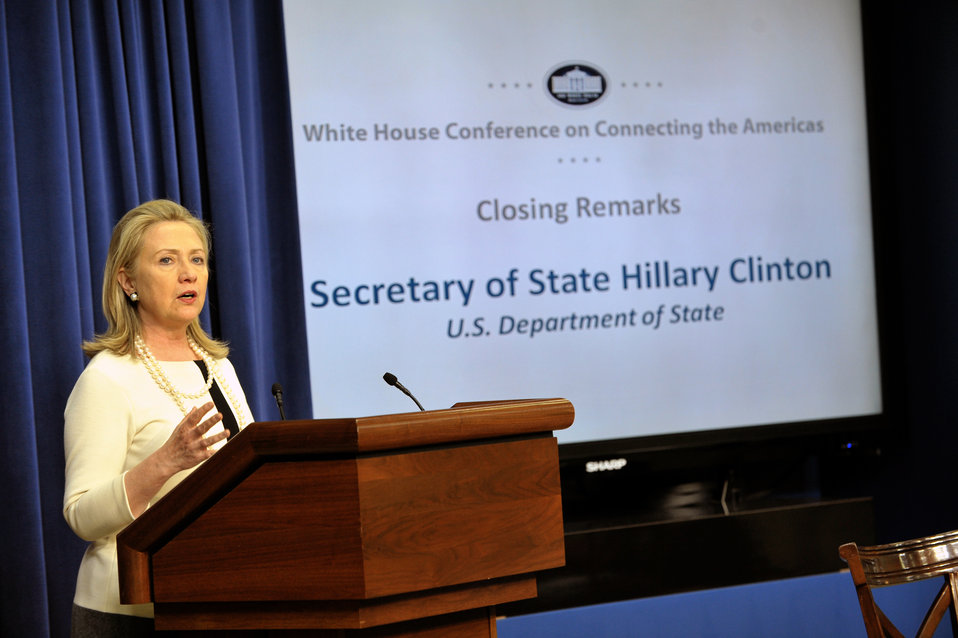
Secretary Clinton Delivers Remarks on Connecting the Americas

U.S. Secretary of State Hillary Rodham Clinton delivers remarks at the White House Conference on Connecting the Americas in Washington, D.C. on April 12, 2012.